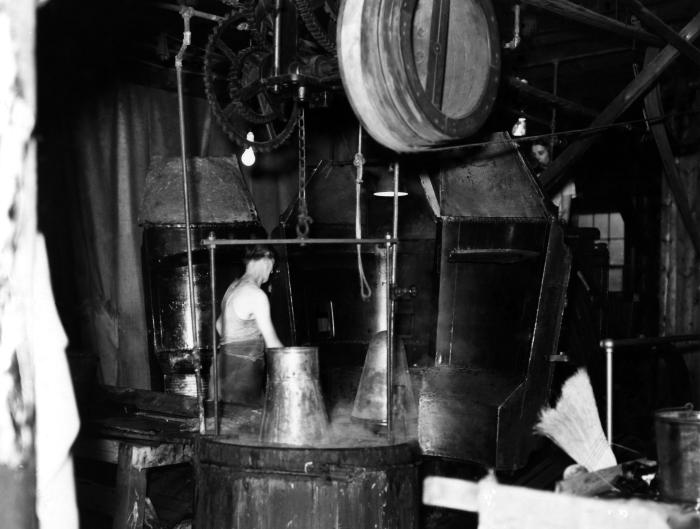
This historical image was provided by the Center for Disease Control's (CDC), National Institute for Occupational Safety and Health (NIOSH). The photograph depicted a hat manufacturing industry worker who was creating new hats using a 'hat cone', as the hat shaper, which shapes the material, i.e., felt, and steam, which also helps to soften the material as it's shaped around the cone. The man does not seem to be wearing any filtered breathing mask, or goggles. Being that he was working with steam, hopefully he was wearing gloves.